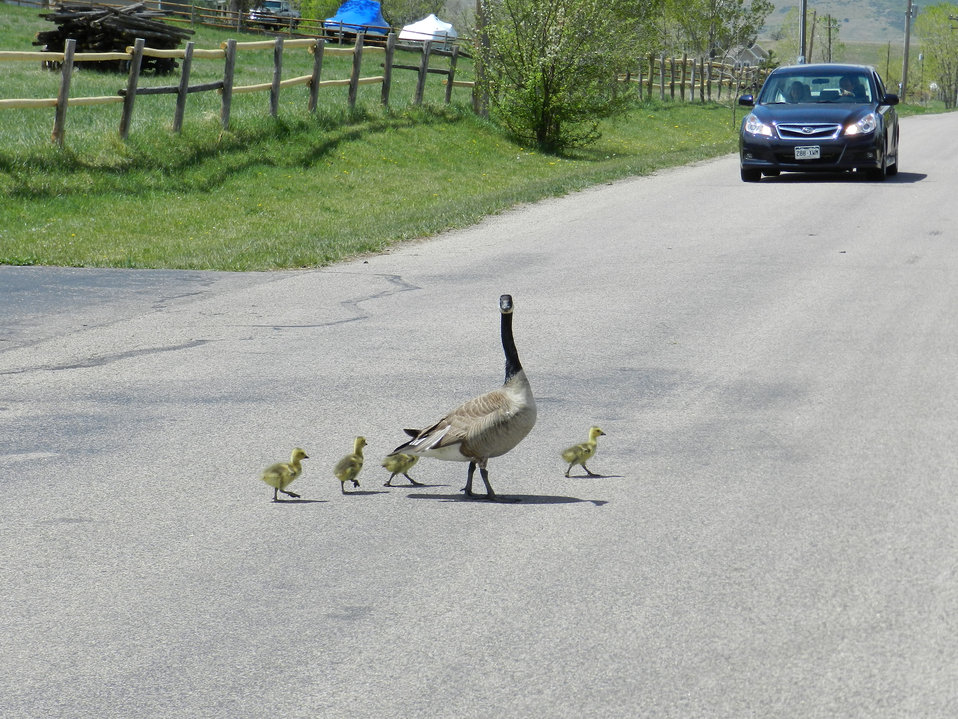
Canada Goose with goslings crossing street in Fort Collins, CO.

Credit: Pedro 'Pete' Ramirez, Jr. / USFWS